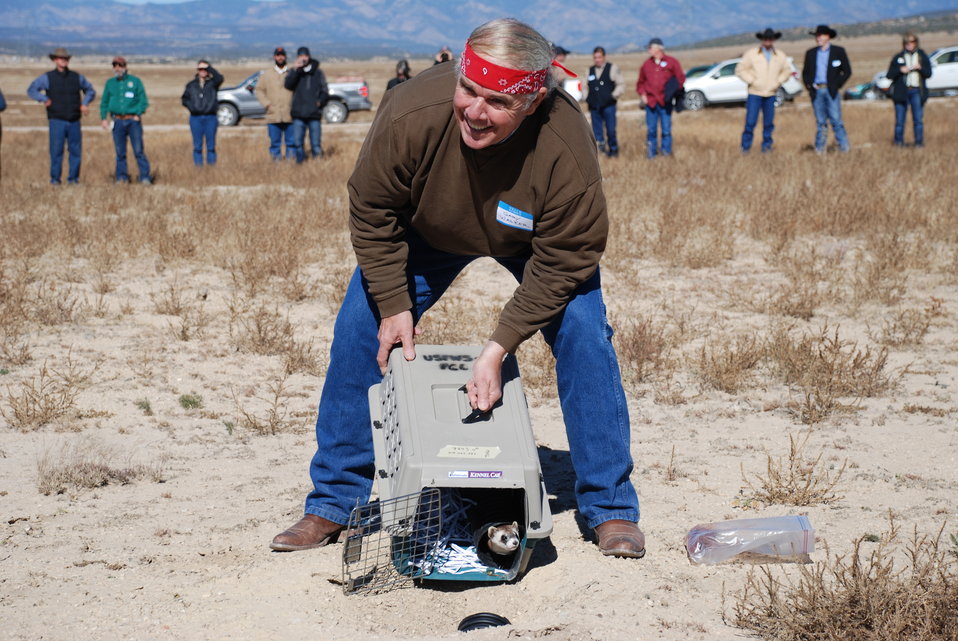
Black-footed Ferret Release

On Wednesday, October 30, 2013, thirty endangered black-footed ferrets were released onto cattle rancher Gary Walker's land, west of Pueblo, Colorado.

The release launched a potentially new way of preserving endangered species and was accomplished by way of a Safe Harbor Agreement (SHA). This SHA provides opportunities for private and Tribal landowners to volunteer their lands for reintroductions of this endangered species without affecting their land-use activities beyond mutually agreed-upon measures. It also extends these assurances to surrounding non-participating lands and other landowner interests. This SHA will be an important step in promoting the recovery of this iconic species.